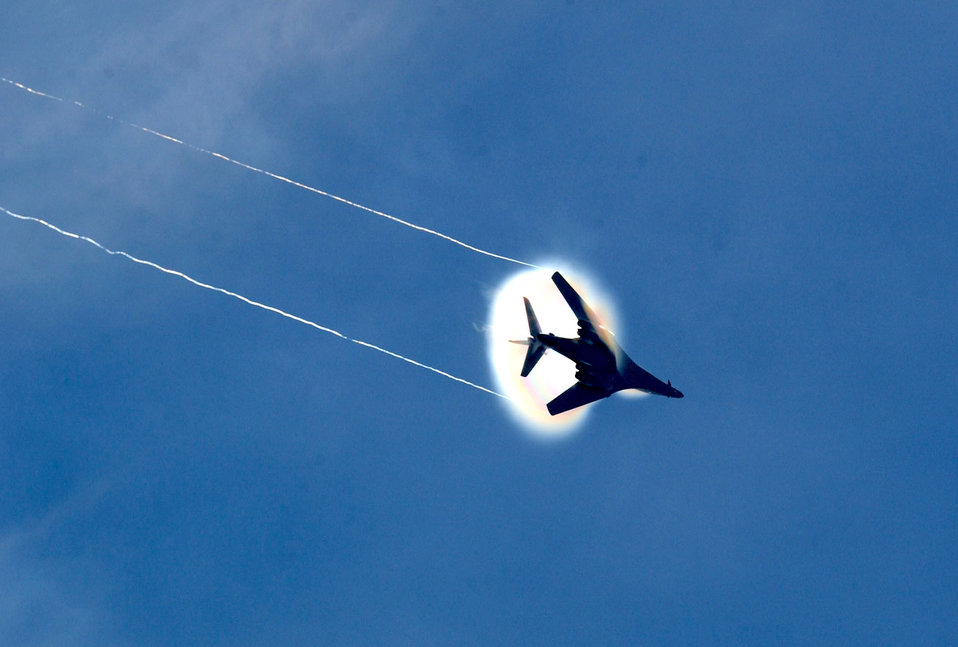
Breaking the barrier

SOUTHWEST ASIA -- A B-1 Lancer banks left just before a rollover during an open house flyby here Jan. 16. More than 1,300 people enjoyed the U.S. Air Force, Navy and Royal Marine-hosted open house that showcased various aircraft.